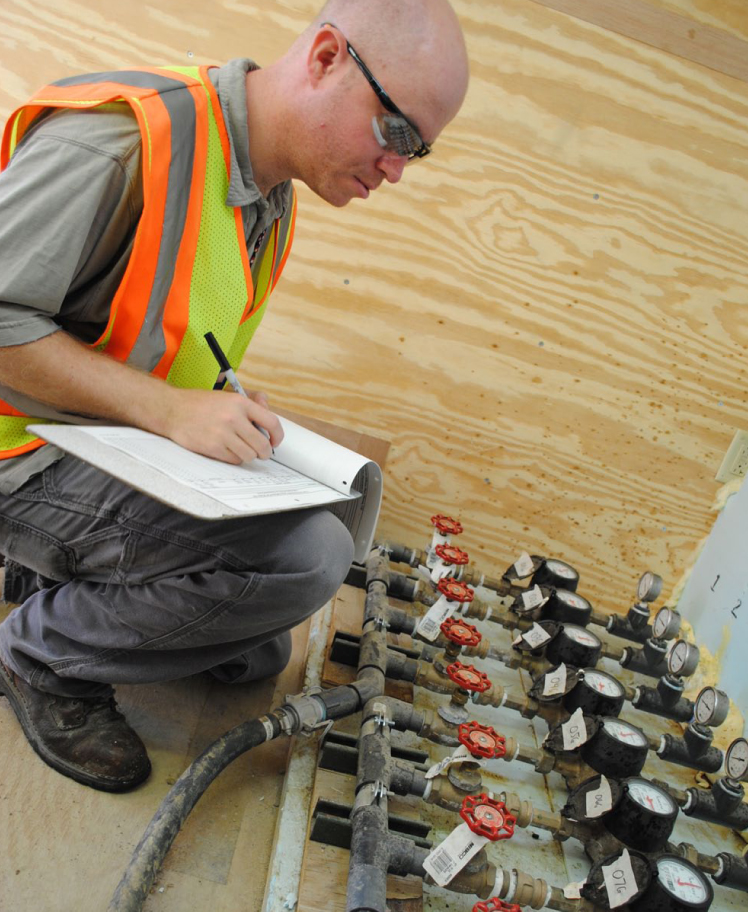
Portsmouth Site Feeds Bacteria to Render Hazardous Groundwater Waste Harmless

Neil Smith of CDM reviews the gauges of hoses leading to some of the 35 on-site injection wells between the X-720 Maintenance Facility and the X-700 Cleaning Facility.